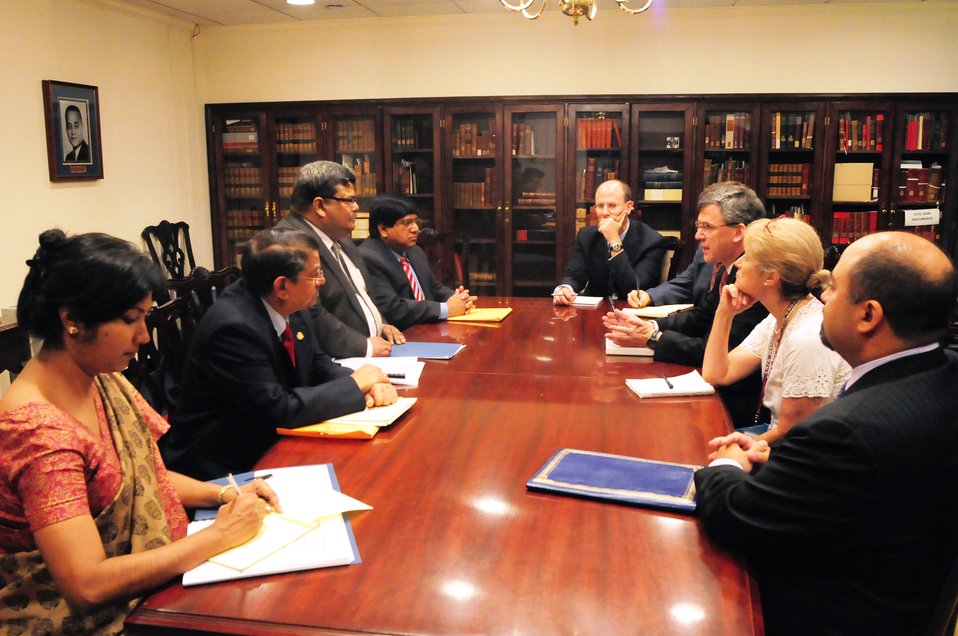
South and Central Asian Affairs Representatives Meet With Bangladeshi Foreign Secretary Mijarul Quayes

Representatives of the U.S. Department of State’s Bureau of South and Central Asian Affairs meet with Bangladeshi Foreign Secretary Mijarul Quayes at the U.S. Department of State in Washington, D.C., on June 29, 2010.